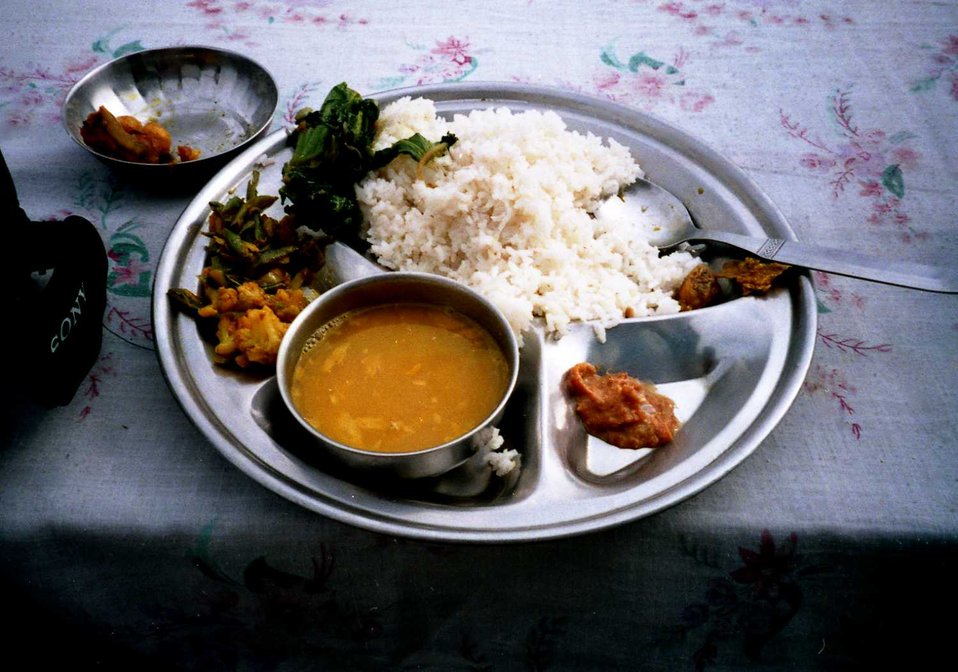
Dal Bath, plat traditionnelle népalais